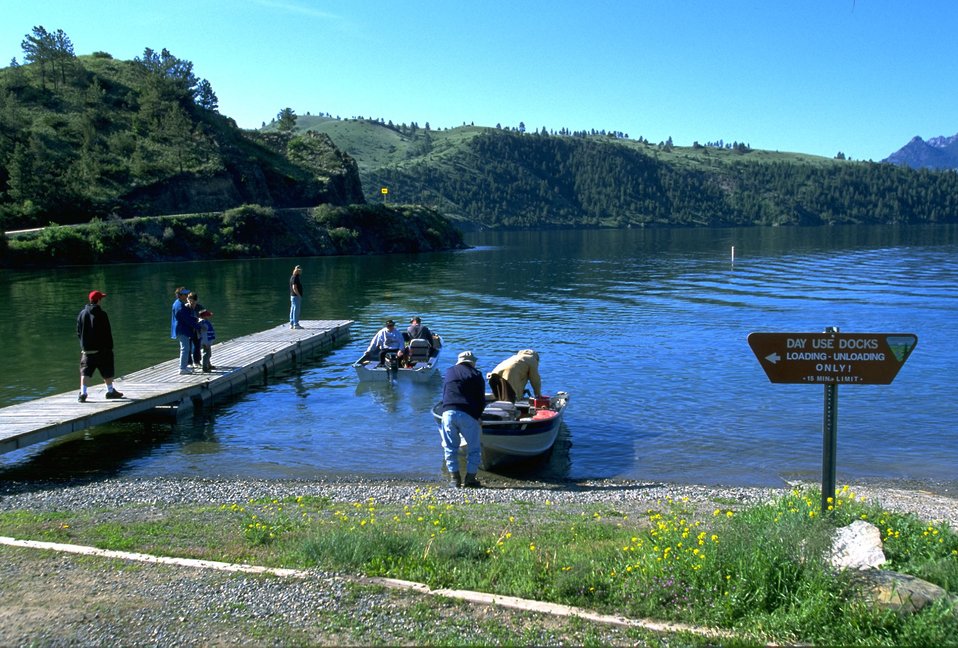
The dock and boats at Log Gulch